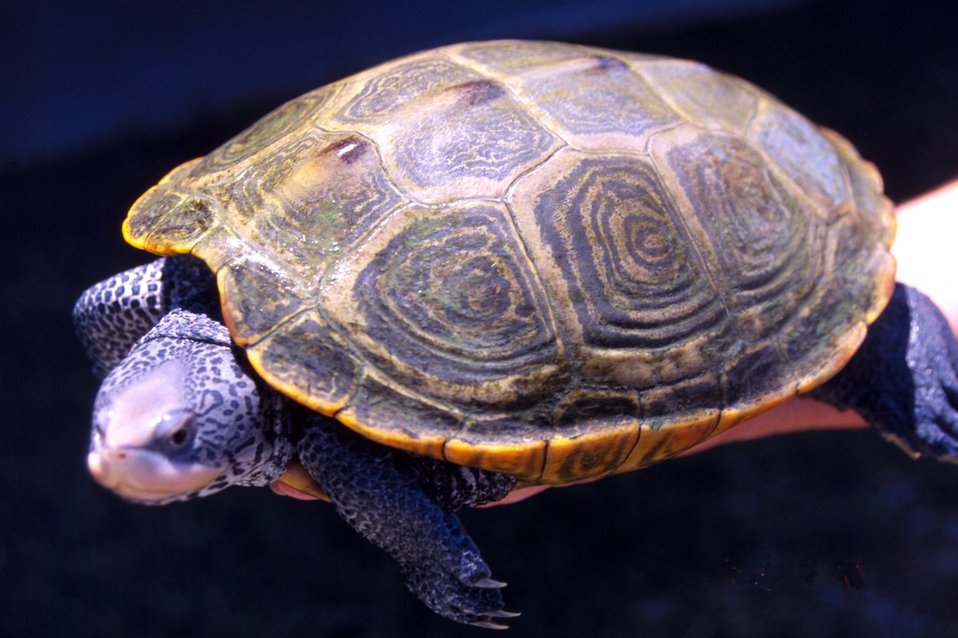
Adult female diamondback terrapin, Malachlenys terrapin.